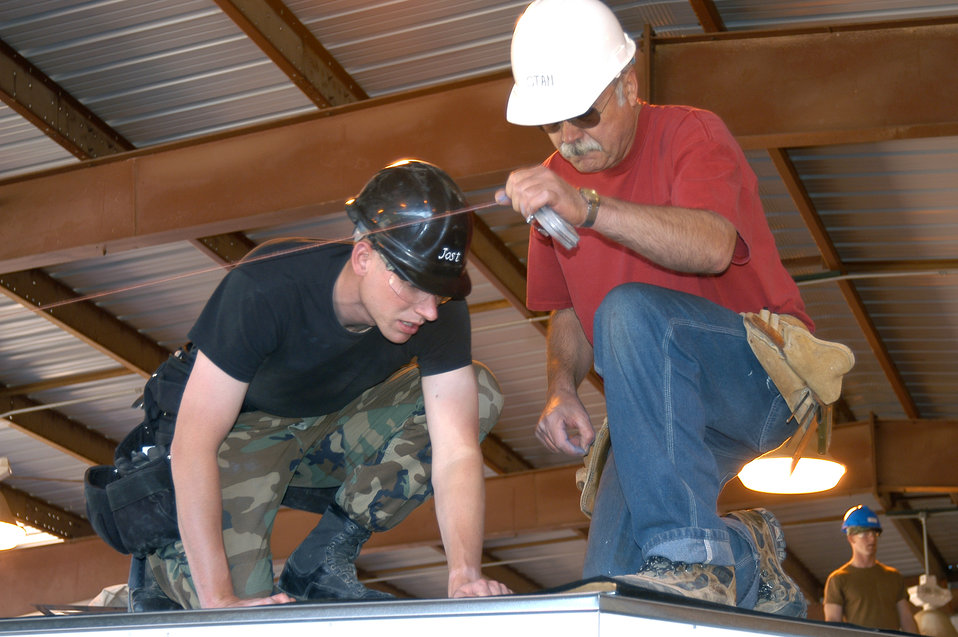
Hands-on experience

U.S. AIR FORCE ACADEMY, Colo. -- Cadet 1st Class Michael Jost (left) and volunteer carpenter Stan Johanson prepare to install roofing material on a traditional eight-sided Navaho hogan being built here June 12. Hogans are being constructed here by 79 cadets taking a field civil-engineering course designed to bridge the gap between academic theory and hands-on practice. The course is managed by a cadre of 19 senior cadets and 35 mentors. Each mentor is an experienced Air Force civil engineer from active-duty, Guard and Reserve units. The hogans are scheduled to be delivered to the Navajo nation in Gallup, N.M., in October.